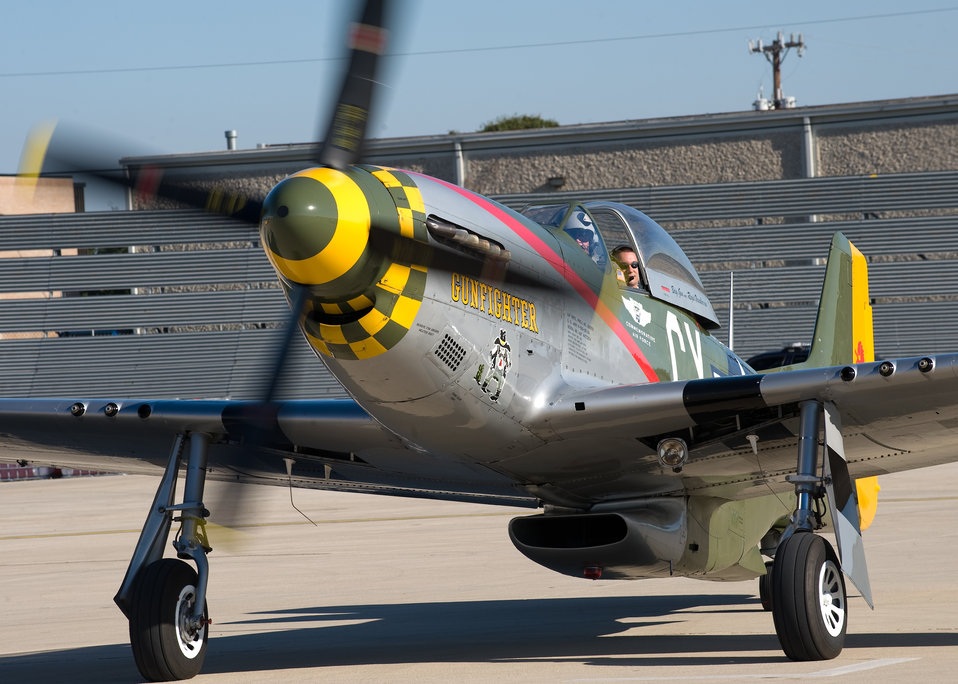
Warrior Flight